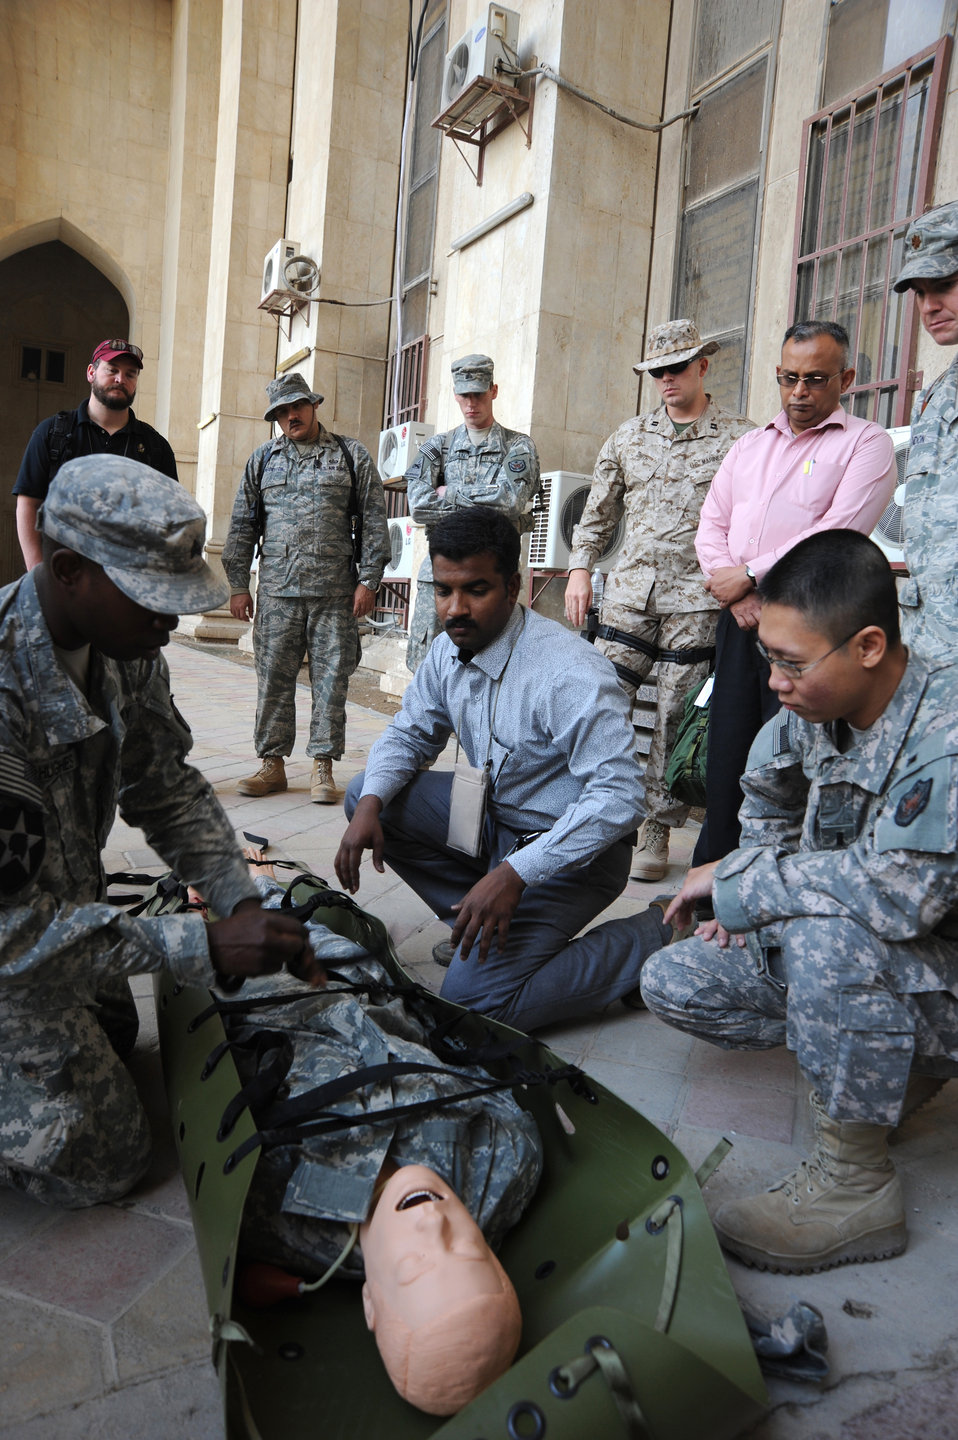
Air Force and Army jointly save lives

Army Sgt. Donell Hughes (left), demonstrates to students how to properly place an individual on a litter during a combat lifesaver training course Dec. 29, 2009, at Baghdad, Iraq. The students were given opportunities to practice using a litter during the exercise portion of the course. Sergeant Hughes is a U.S. Forces-Iraq, Deputy Commanding General-Advising and Training Health Affairs combat medic.